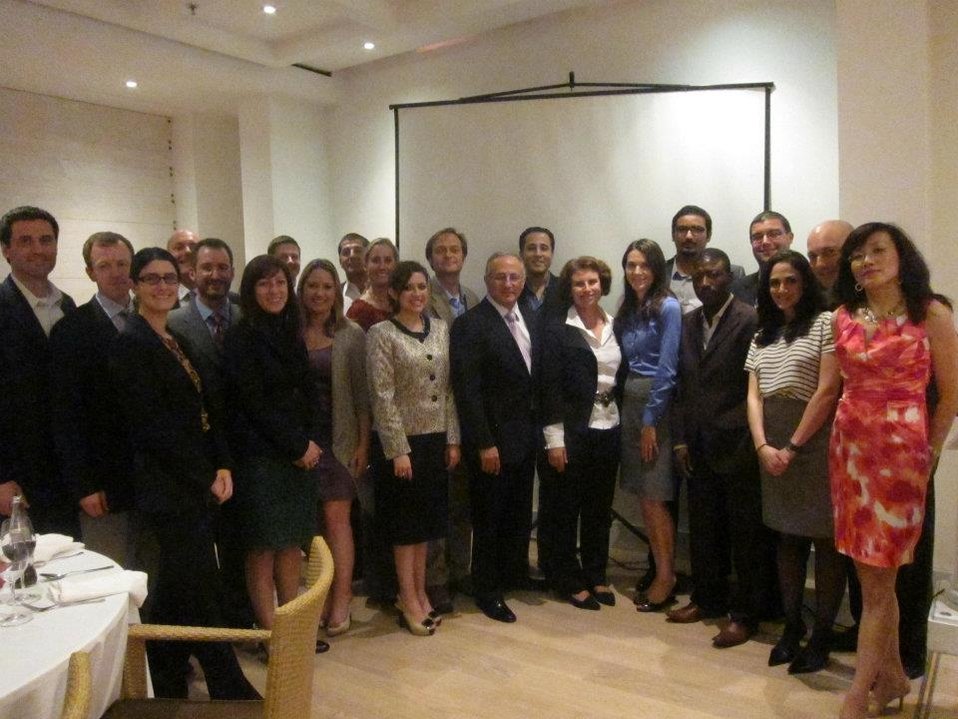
Special Represenative Hariton Poses for a Photo With Algerian Tech Town Winner Benali and Morocco Delegation

Special Representative for Commercial and Business Affairs Lorraine Hariton poses for a photo with Youghourta Benali, Maghreb Delegation in Algeria winner and founder of Walletix and the Morocco Delegation in Casablanca, Morocco, on November 1, 2011.